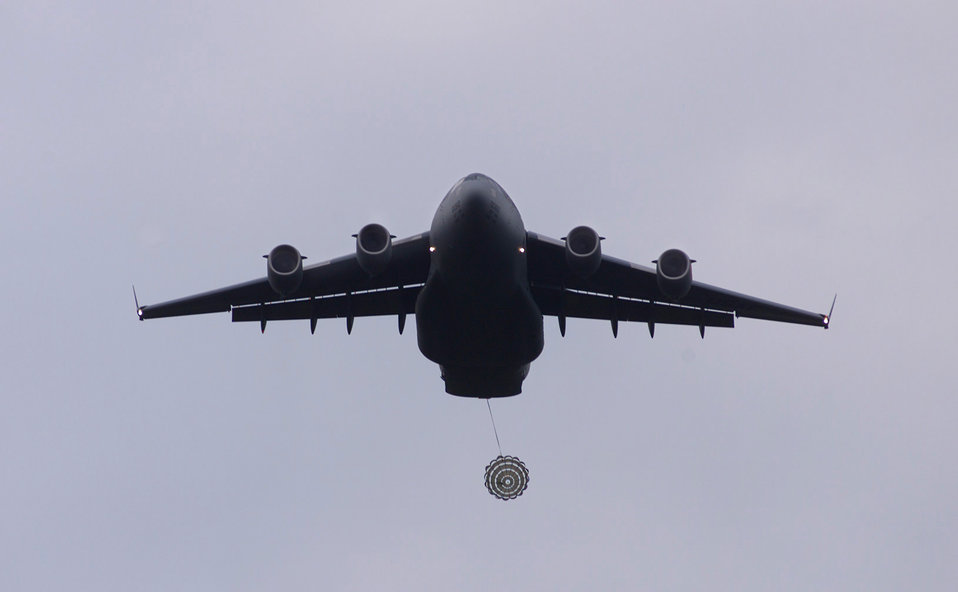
Heavy drop

FORT BRAGG, N.C. -- A C-17 Globemaster III from the 62nd Airlift Wing, McChord Air Force Base, Wash., prepares to make a heavy drop at the Nijmegen Drop Zone, Fort Bragg, N.C., during the Rodeo 2000 competion. Teams from all over the world are competing in areas including airdrop, aerial refueling, aircraft navigation, special tactics, short field landings, cargo loading, engine running on/offloads, aeromedical evacuations and security forces operations.